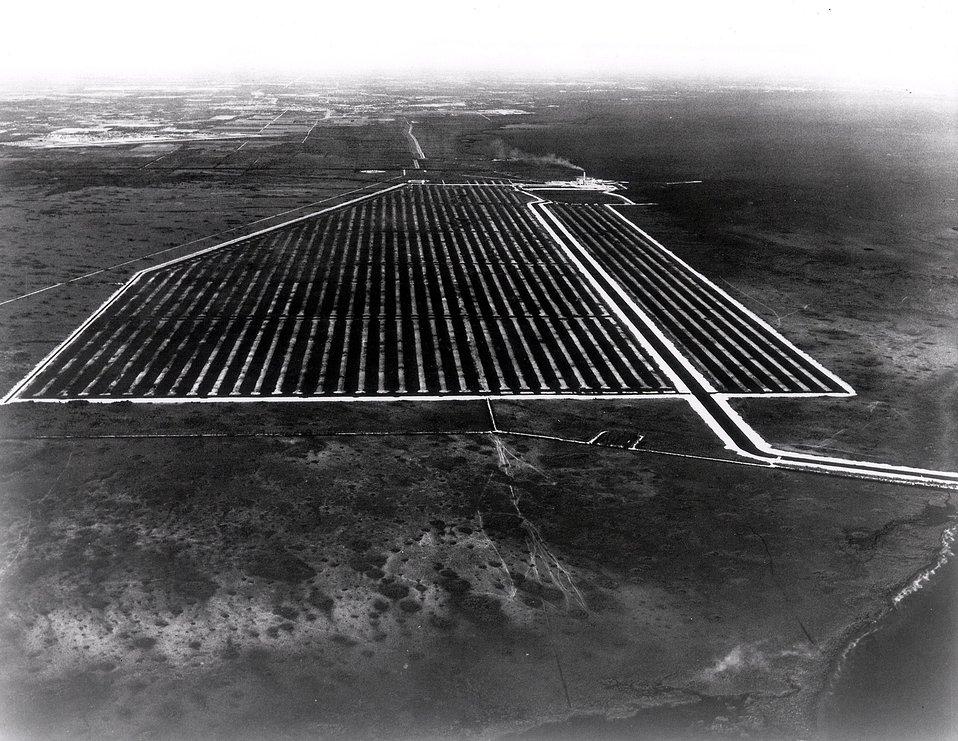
Turkey Point... Cooling canal system at Florida Power & Light Company's Turkey Point Plant shown in this aerial photo looking north. The plant and the canal system about 25 miles south of Miami on the Western shore of Biscayne Bay. Circa 1974.